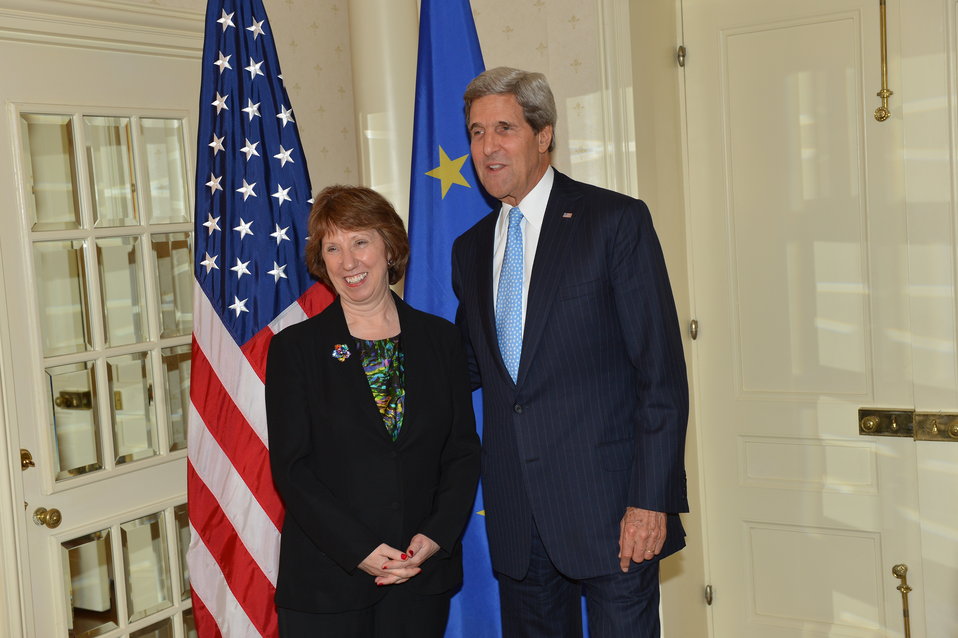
Secretary Kerry Meets With EU High Representative Ashton

U.S. Secretary of State John Kerry meets with EU High Representative Catherine Ashton in New York City on September 22, 2013.